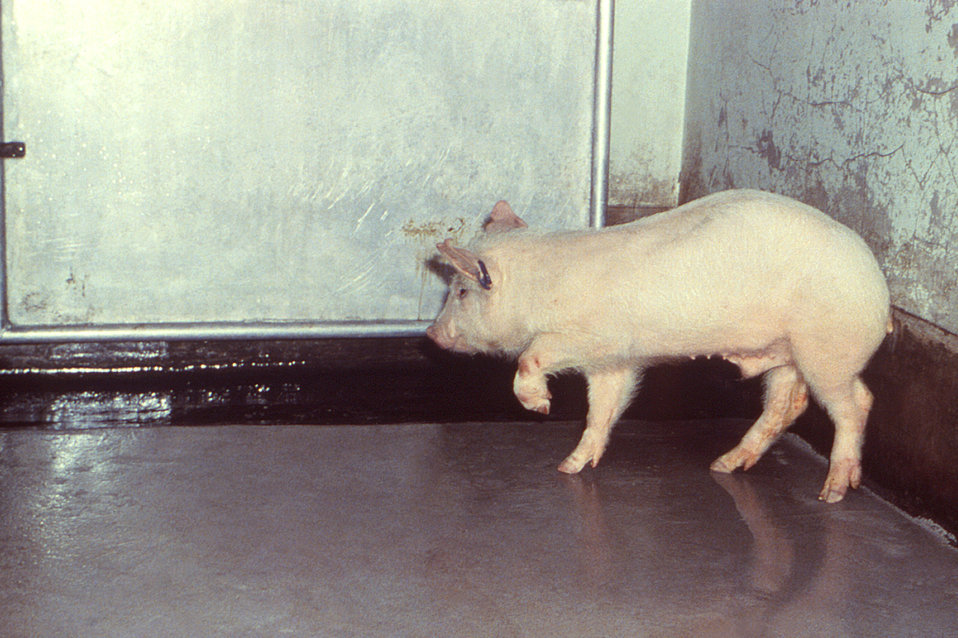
From the 'Illustrated Manual for the Recognition and Diagnosis of Certain Animal Diseases', published in 1982, by the Mexico-United States Commission for the Prevention of Foot and Mouth Disease, this photograph depicts a domesticated pig ill with a case of hog cholera (HC). In this particular view, the animal was exhibiting neurological signs of disease in the form of an awkward gait known as 'goose stepping'.